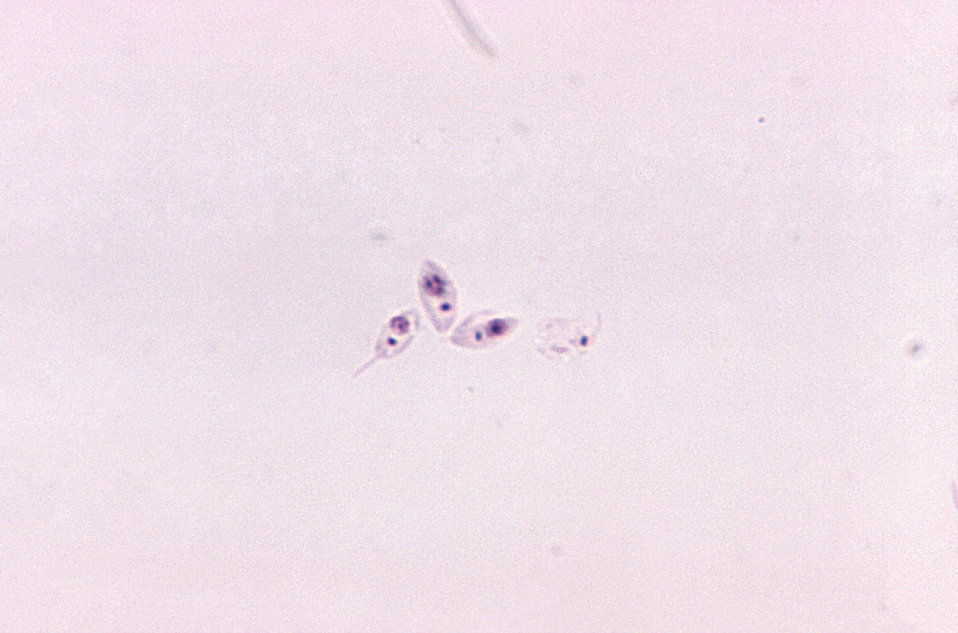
Leishmania tropica, leptomonad form. Parasite.